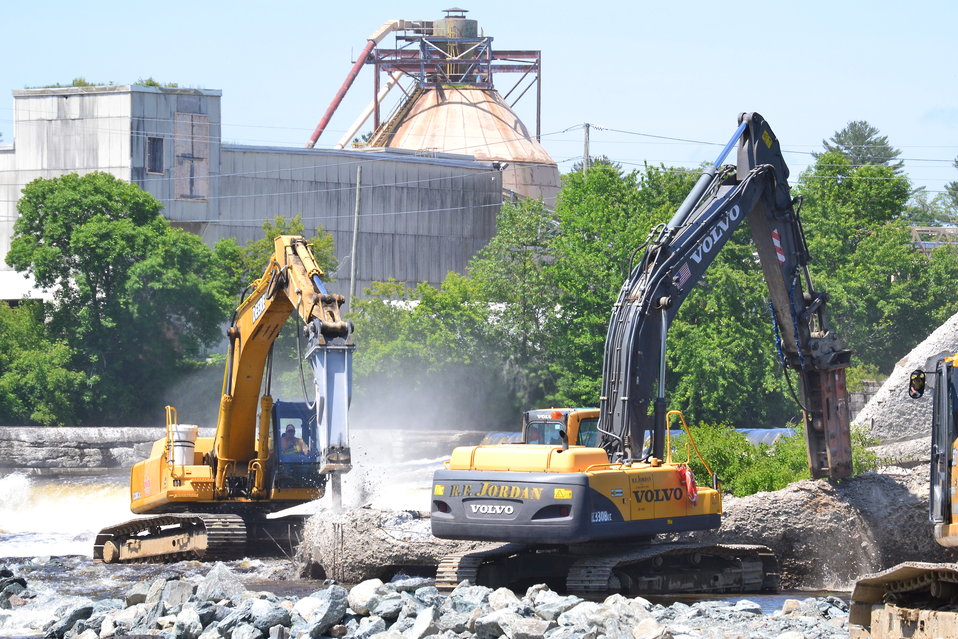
Demolition Begins